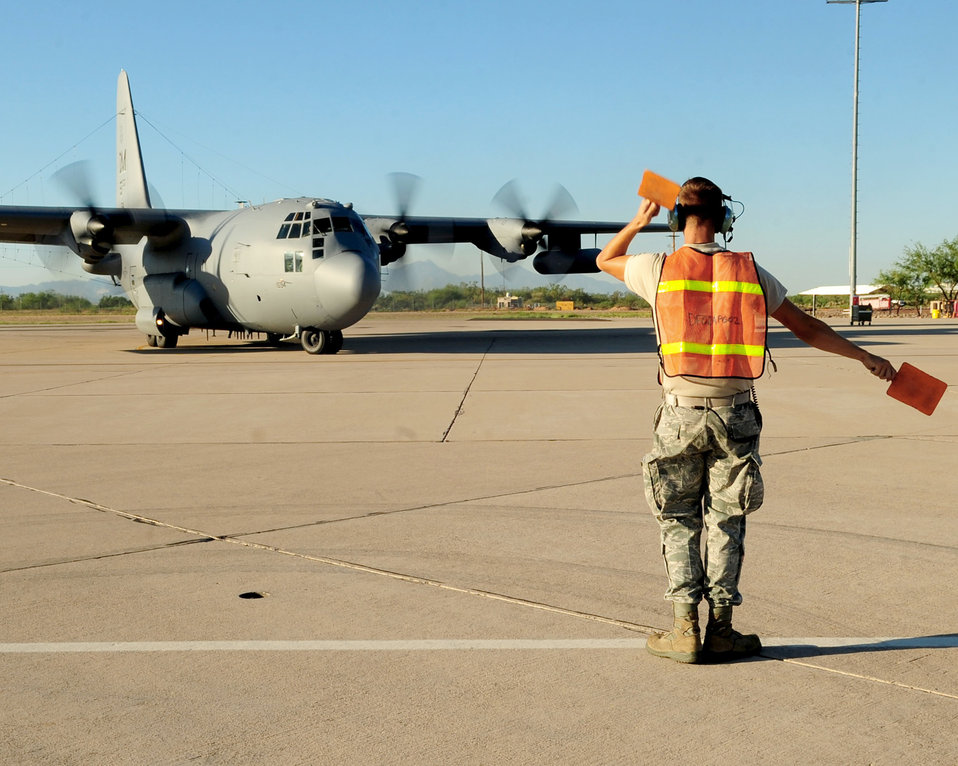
ISR demo

Airman 1st Class Marshall Dils guides an EC-130H Compass Call aircraft out of its parking spot and down the taxiway as it prepares to fly a training mission in support of Empire Challenge 10, a joint and coalition intelligence, surveillance and reconnaissance interoperability demonstration from July 26 to Aug. 13, 2010, staged primarily from Fort Huachuca, Ariz. Airman Dils is a member of the 755th Aircraft Maintenance Squadron.